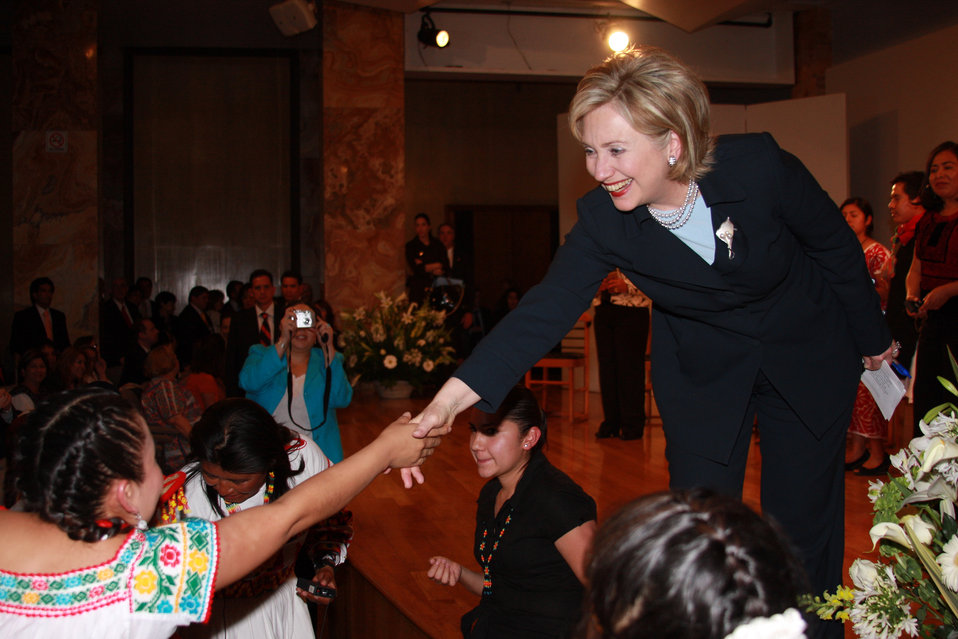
Secretary Clinton Attends Roundtable With Indigenous Students and Teachers

U.S. Secretary of State Hillary Rodham Clinton greets a member of the audience at a Roundtable with Indigenous Students and Teachers, Museum of Fine Arts, Mexico City, March 25, 2009.